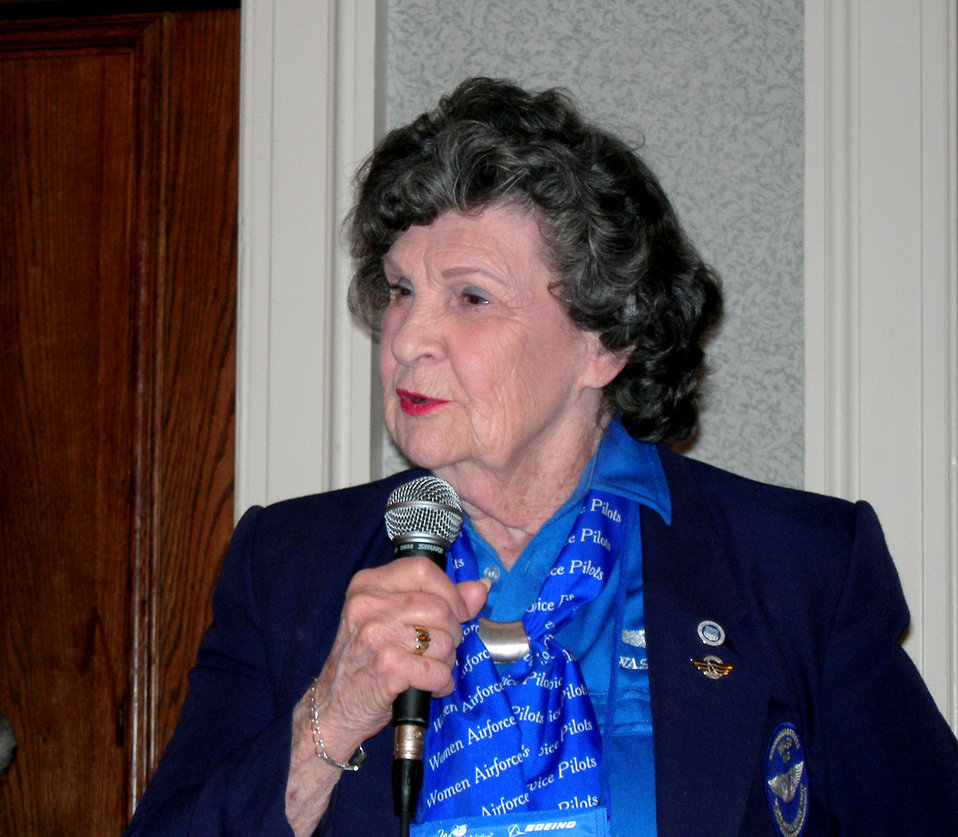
Three Air Force trailblazers among Hall of Fame inductees

Retired Air Force Lt. Col. Betty Jane Williams speaks during a Women Airforce Service Pilots, or WASP, panel at the 17th Annual Inernational Women in Aviation Conference in Nashville, Tenn., Saturday, March 25, 2006. Colonel Williams was inducted into the organization's Pioneer Hall of Fame.